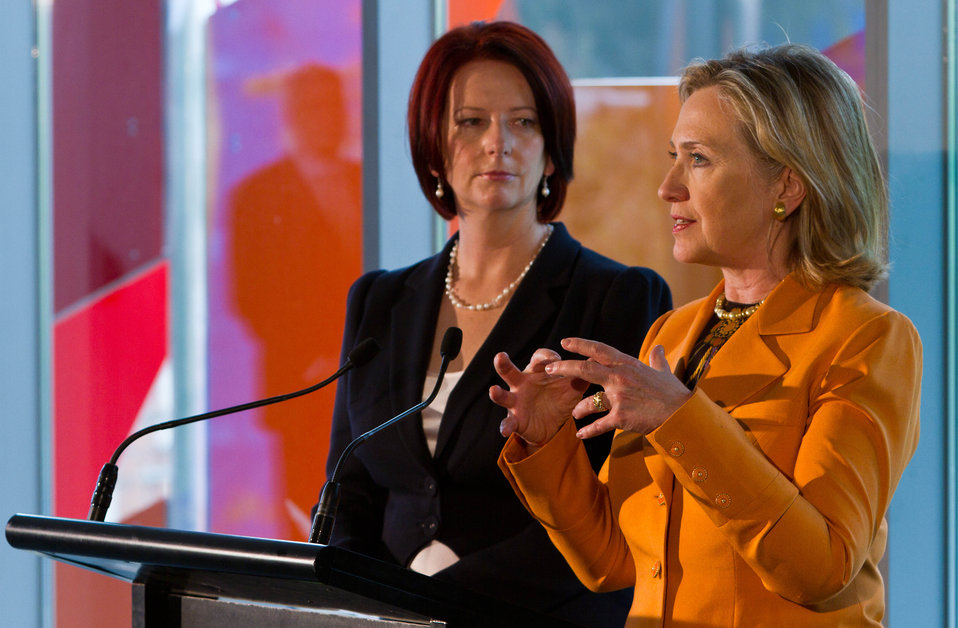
Secretary Clinton Delivers Remarks

U.S. Secretary of State Hillary Rodham Clinton, with Australian Prime Minister Julia Gillard, delivers remarks at the Pixel Building Clean Tech Event in Melbourne, Australia, on November 7, 2010.